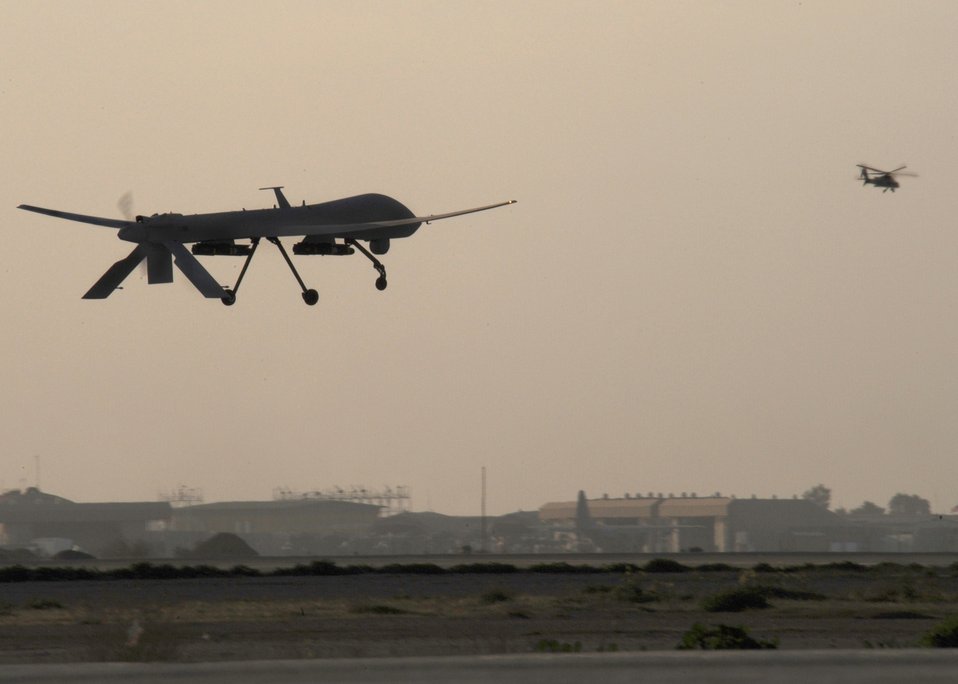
Predator takes to the sky

Officials at the 332nd Air Expeditionary Wing at Joint Base Balad, Iraq, received a new unmanned MQ-1 Predator and immediately put it to action. The Predator took its maiden flight from the base Feb. 13. The Predator is a remotely piloted plane used for reconnaissance and for strike missions with laser guided missiles if needed.